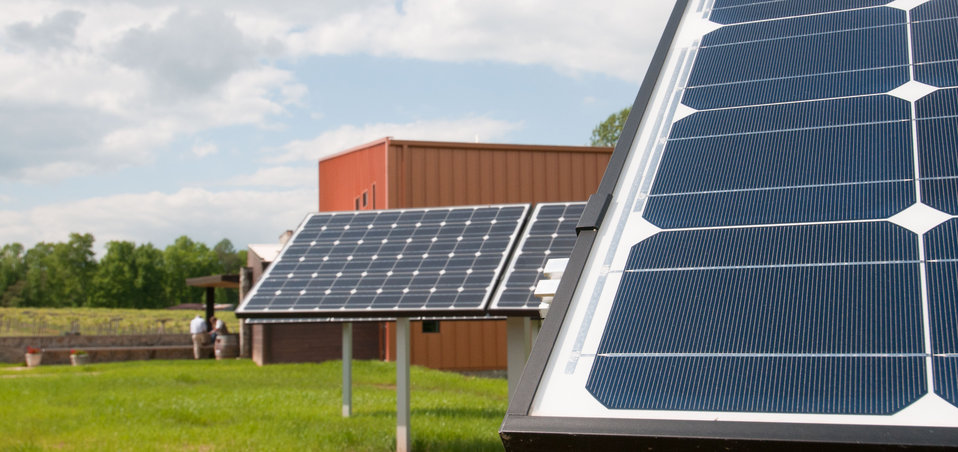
Solar photovoltaic array at Cooper Vineyards in Louisa, VA, the first winery on the East Coast and the second in the country to be awarded the fourth and highest, Platinum certification by Leadership in Energy and Environmental Design (LEED), May 4, 2011.
From a Virginia Wine Board Marketing Office press release, “The process of building a LEED platinum certified building was initially more expensive and arduous than co-owners, Jacque Hogge, MD and Geoffrey Cooper, MD expected, but they were able to get financial assistance from the United States Department of Agriculture. “Know that there are grants available to help with the costs of sustainable building projects,” Hogge advises to other potential green wineries. Cooper Vineyards received 2 of the 3 USDA (U.S. Department of Agriculture Rural Development (RD) Rural Energy Financing program) grants awarded in Virginia in 2010 to help with the expenses of their construction.”
Rural Energy Financing program focuses on loan guarantees, loans and grants to agricultural producers, businesses, cooperatives and rural residents for renewable energy systems and to make energy efficiency improvements.
The tasting room and building collects rainwater from the roof; uses low flow water fixtures to reduce usage by 40%; utilizes structurally insulated panels for the roof and walls; heats and cools the entire building using a geothermal system that includes pipes that are embedded in the parking lot; low-voltage LED lighting with daylight and occupancy sensors provide ample light when it is needed; a solar panel array provides more than 15% of the energy needs for the building, and much of the construction materials are from local and recycled material sources. For more information about USDA please go to www.usda.gov, Rural Development and Rural Energy Financing. LEED was developed by the U.S. Green Building Council (USGBC) is a 501 c3 non-profit organization committed to a prosperous and sustainable future for our nation through cost-efficient and energy-saving green buildings.